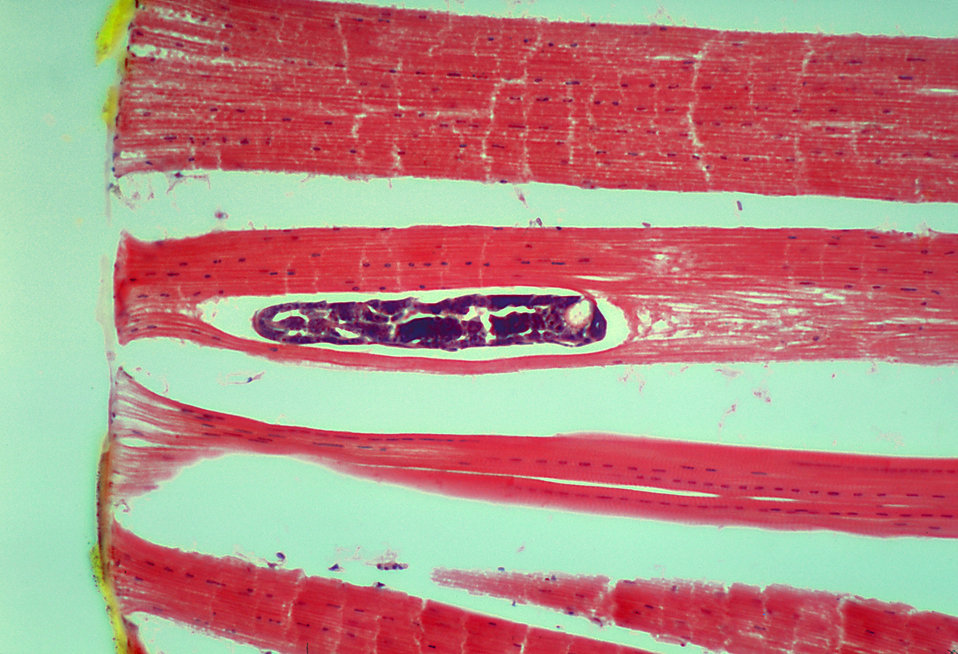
A photomicrograph revealing the histology of Onchocerca volvulus developing in a Black Fly, Simulium ochraceum.